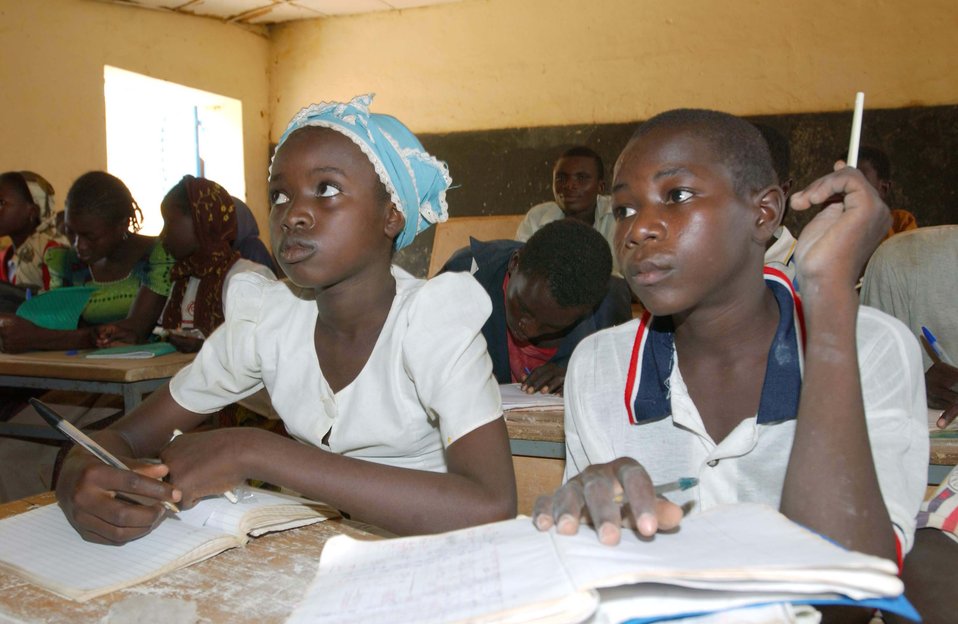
Reservists visit Nigerien school

NEAR CAMP TONDIBIAH, Niger -- Students intently listen to Reserve medics who came to their school to discuss health care and hygiene. The reservists were part of an Air Force Reserve humanitarian mission in Niger.